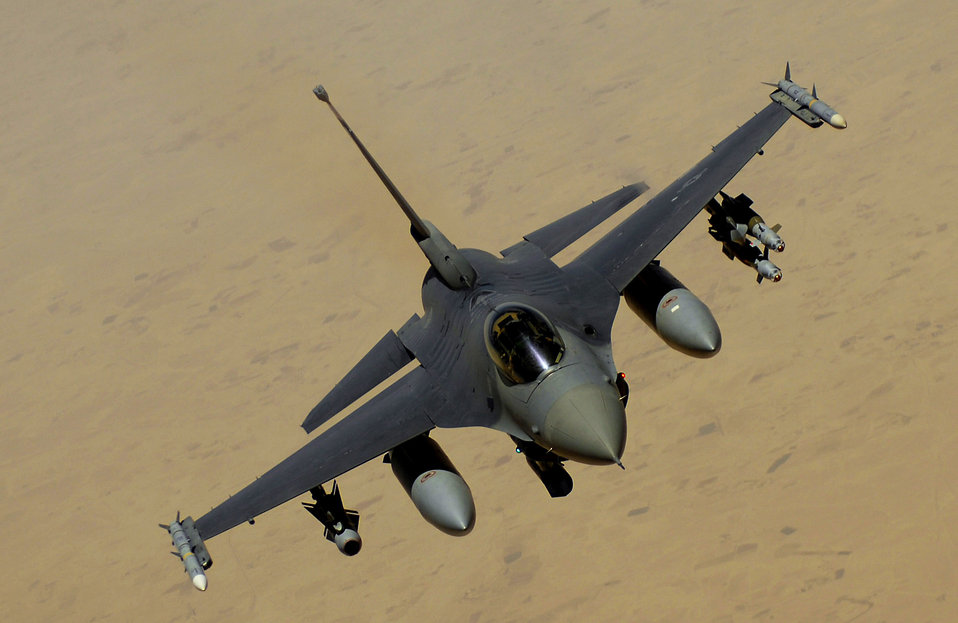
Dec. 15 airpower summary: F-16s watch over ground forces

An F-16 Fighting Falcon aircraft returns to the fight after receiving fuel. The F-16 performs tactical shows of force and provides armed aerial overwatch for coalition forces over Iraq.